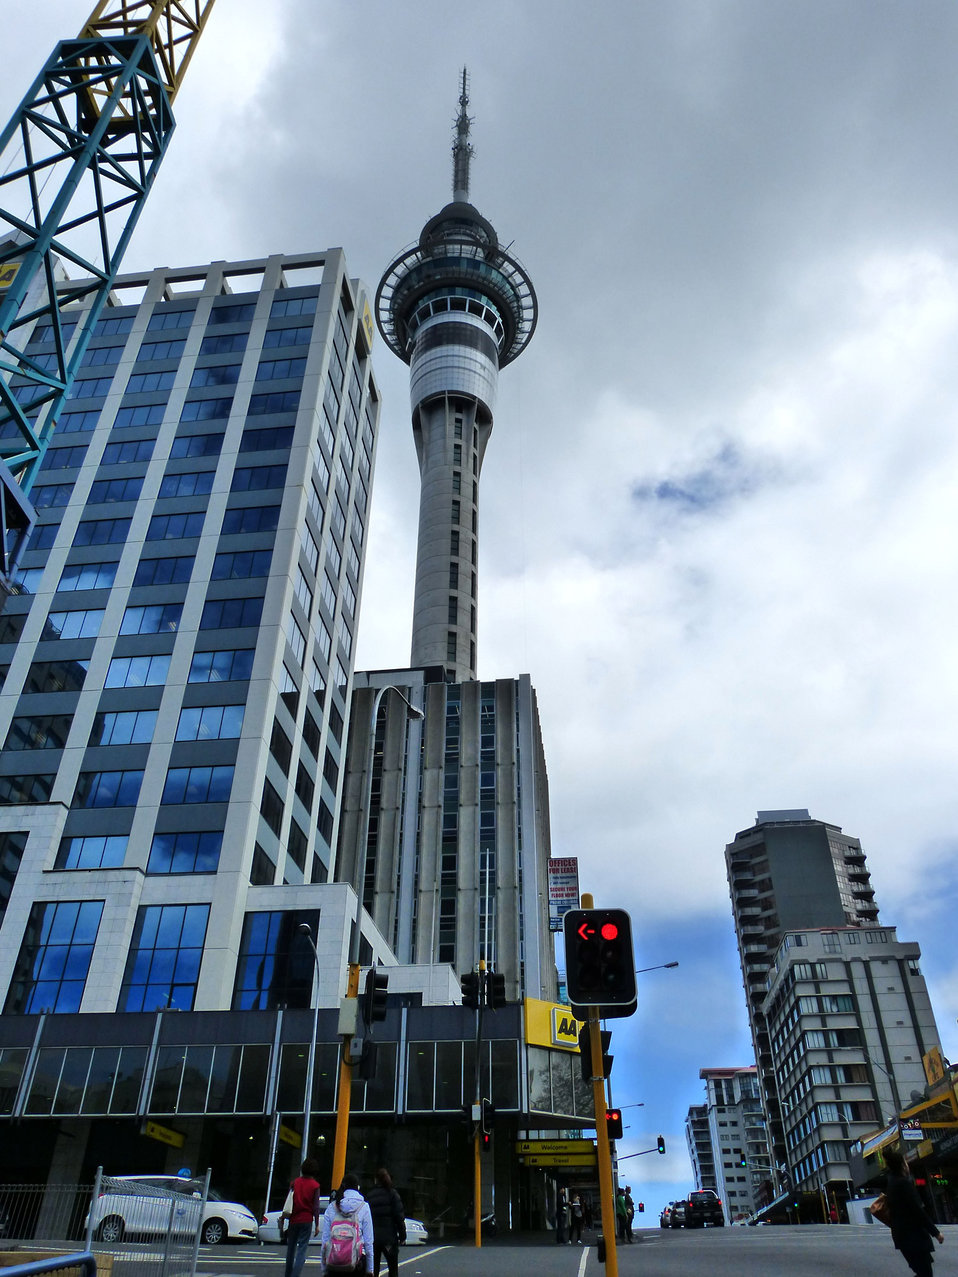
Sky tower 2

Sky tower - auckland.